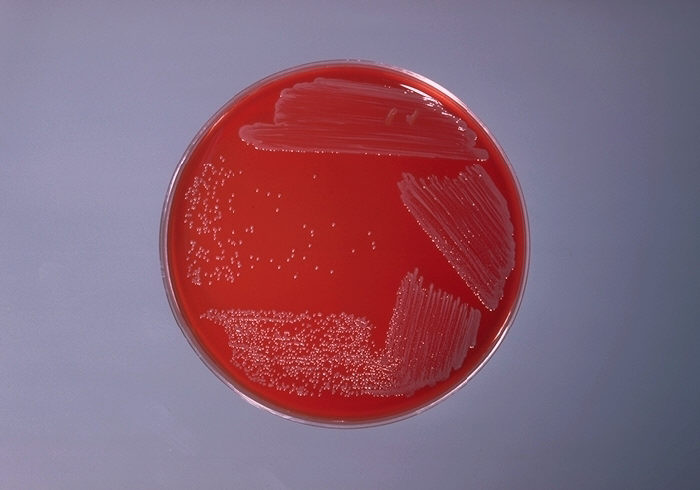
Blood agar plate culture of Corynebacterium diphtheriae (belfanti).